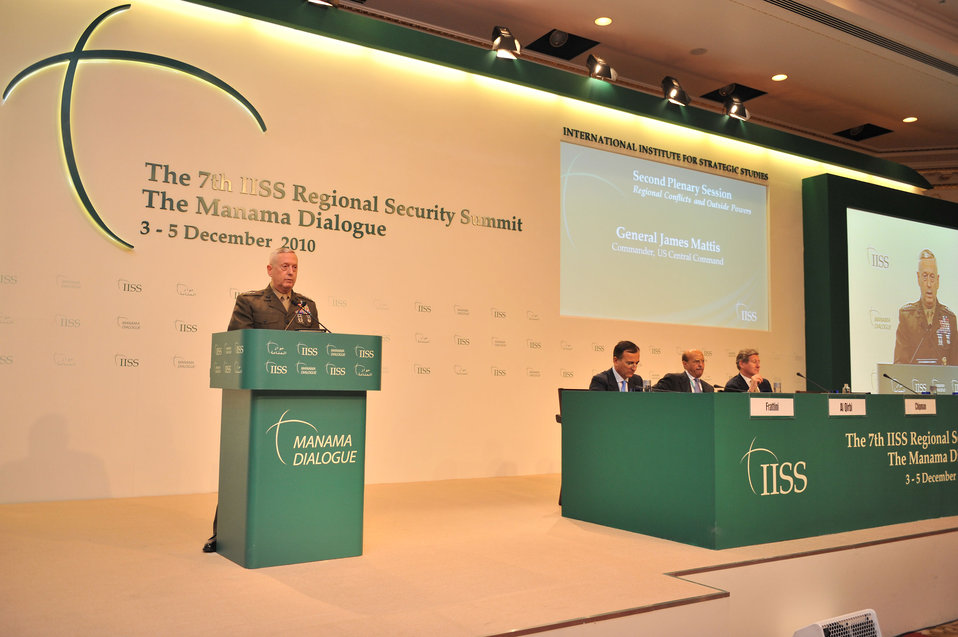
General Mattis Speaks at the Seventh IISS Regional Security Summit Manama Dialogue

General James Mattis, Commander of the U.S. Central Command, speaks at the Seventh IISS Regional Security Summit Manama Dialogue in Bahrain, December 3, 2010.